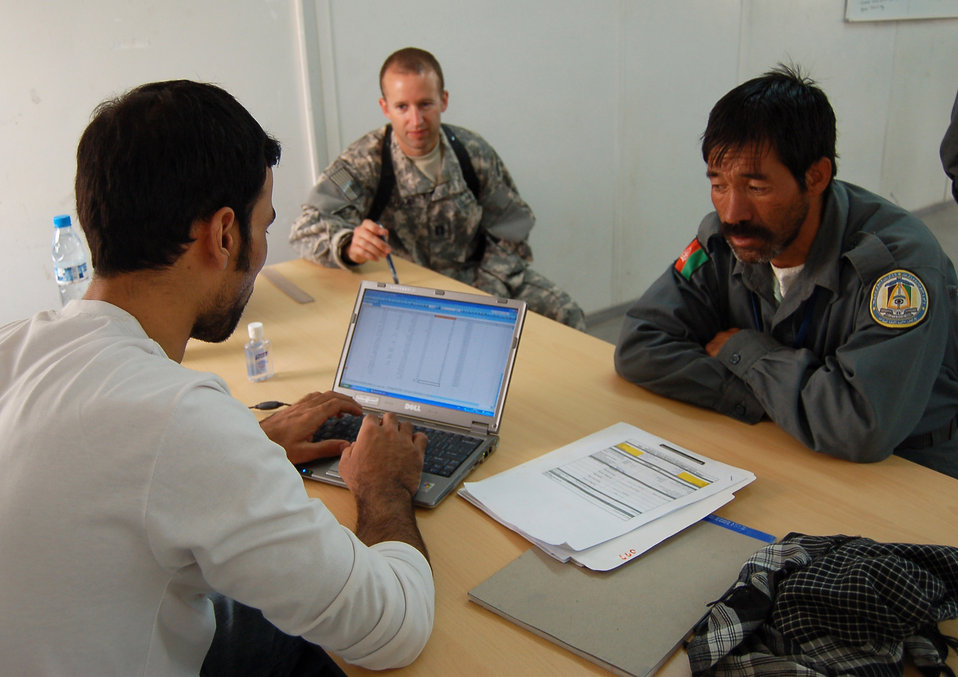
STC-A team contributes to development of trustworthy ANP force

Capt. Sam Shimp watches while an Afghan civilian assigned to the Regional Training Center in Konduz, Afghanistan, logs an Afghan National Police officer into a database during processing July 20. More than 200 police officers were processed for Focused District Development training, a program to create a professional and well-trained police force, district by district. Captain Shimp is the Combined Security Transition Command-Afghanistan finance reform officer.